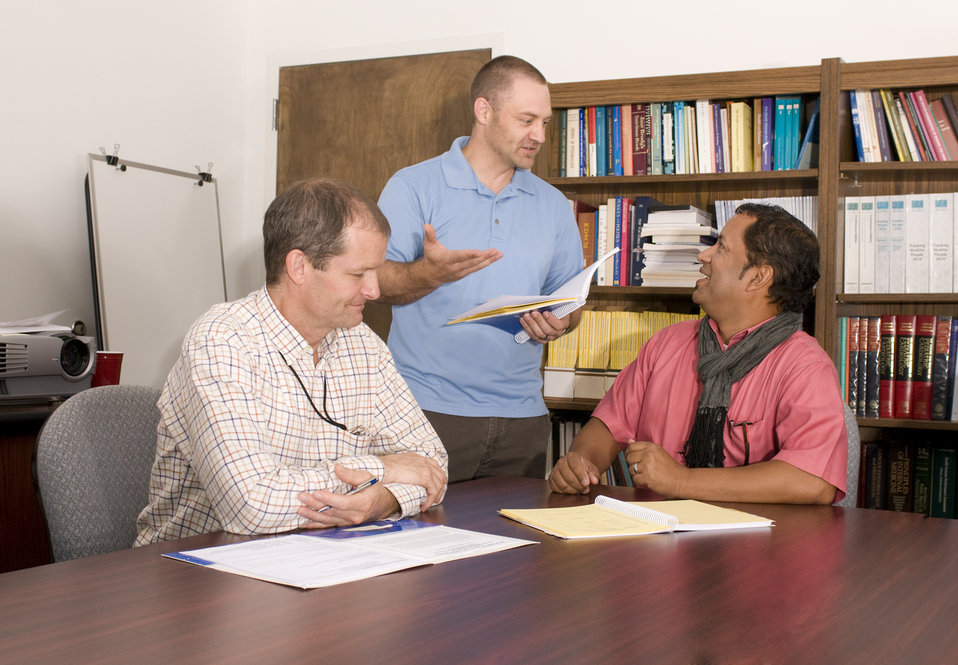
This image depicts a group of healthcare workers seated at a table discussing a strategy they would be implementing, which would guide them through an instructional campaign centered on the education of the diabetic patient to the healthy lifestyle one must implement in order to maintain control over the detrimental effects of this disease. One of the attendees had stood up, and was discussing some literature that had been brought to the meeting.